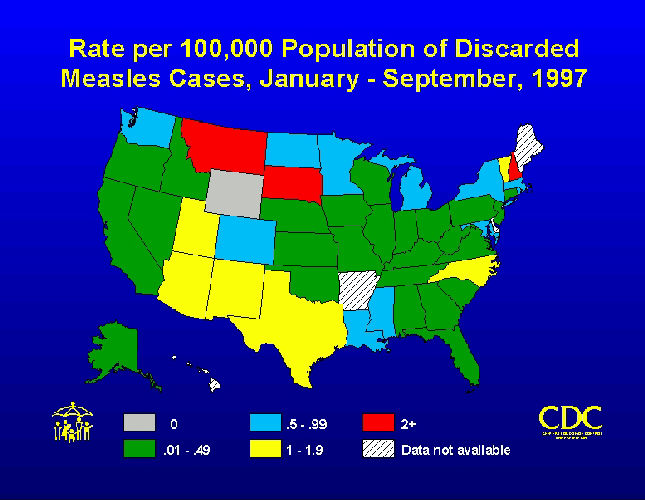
Rate per 100,000 population of discarded measles cases, January - September, 1997.